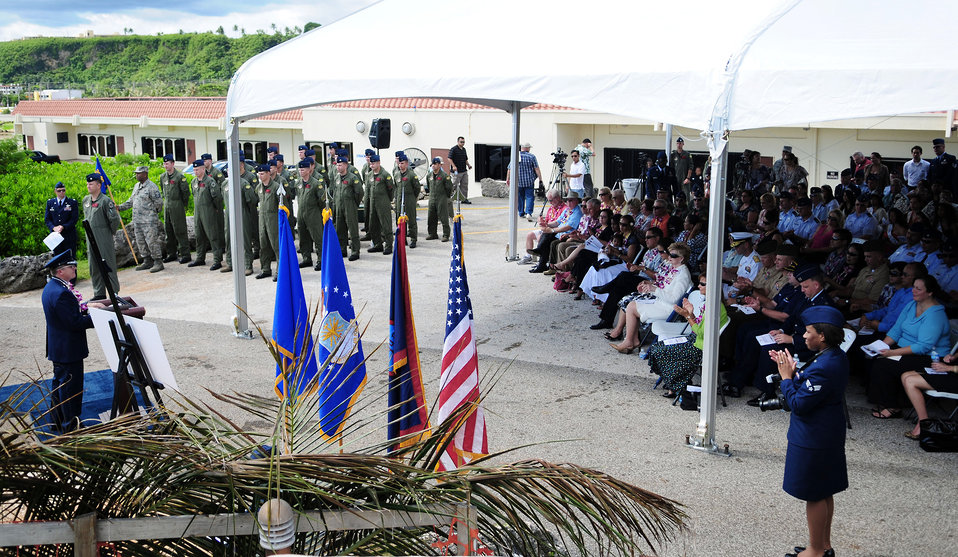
RAIDR 21 memorial

Brig. Gen. Phil Ruhlman, commander of the 36th Wing at Andersen Air Force Base, Guam, speaks about the dedication of the fallen RAIDR 21 aircrew July 20 during a memorial unveiling ceremony at the Governor's Complex at Adelup Point in Hagatna, Guam. Family, friends and co-workers of the B-52 Stratofortress aircrew -- call sign RAIDR 21 -- along with members of the local Guam community honored the memory of the Airmen with the ceremony and the unveiling of a memorial dedicated to them. The aircrew died when their B-52 crashed off the coast of Guam July 21, 2008.